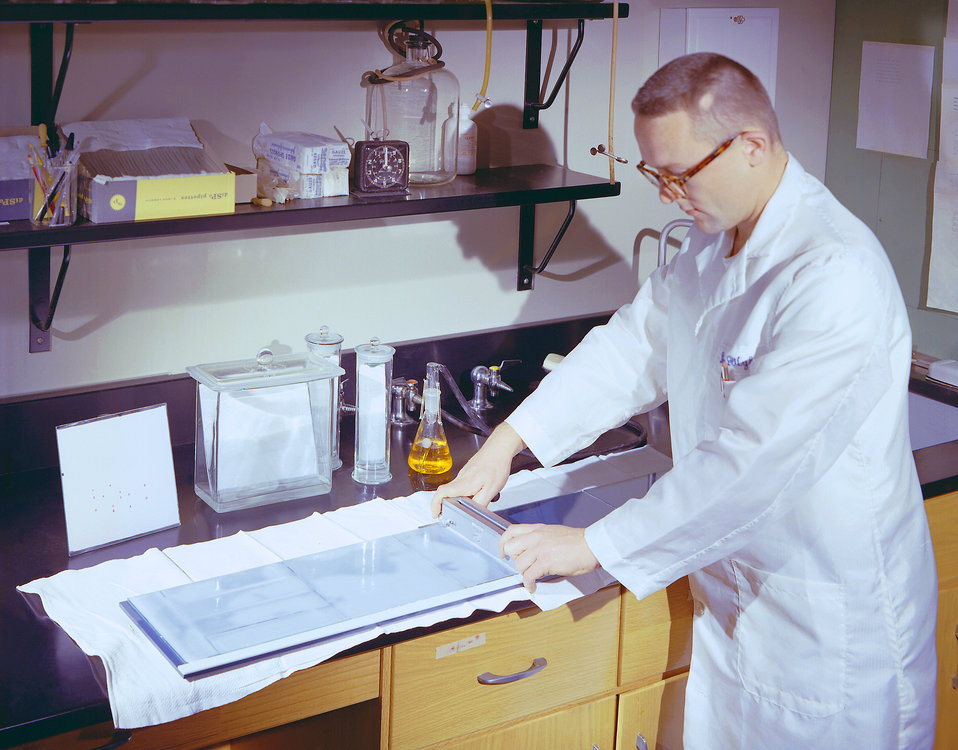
This historic 1963 photograph depicted laboratorian, Dr. Wylie, as he was preparing materials that would enable him to conduct a thin-layer chromatography test.